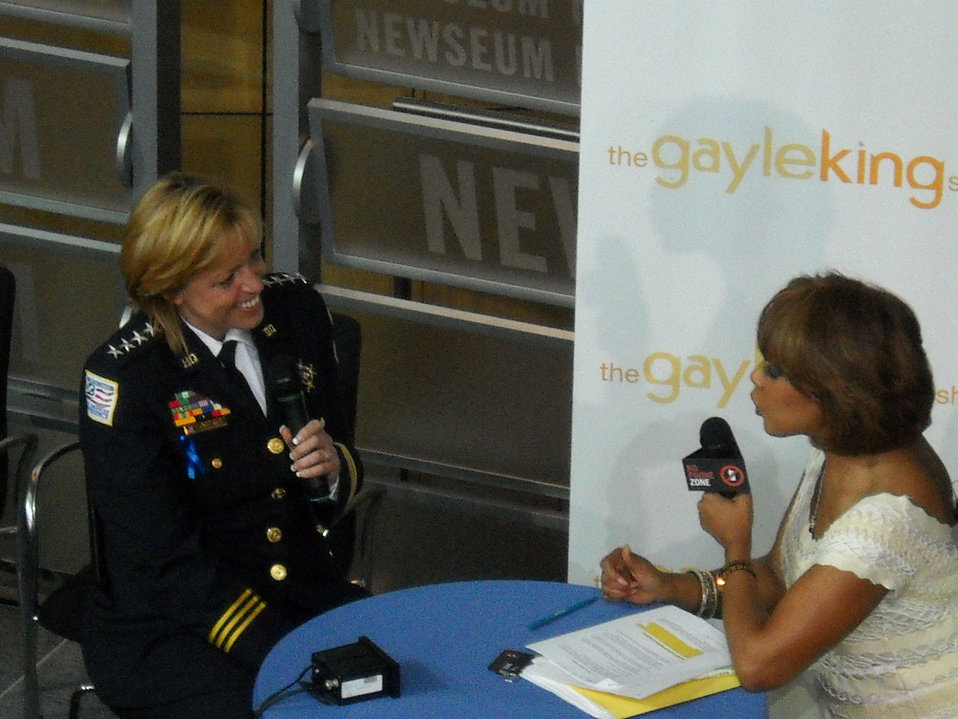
National No Phone Zone Day Newsum Washington, DC April 30, 2010 030